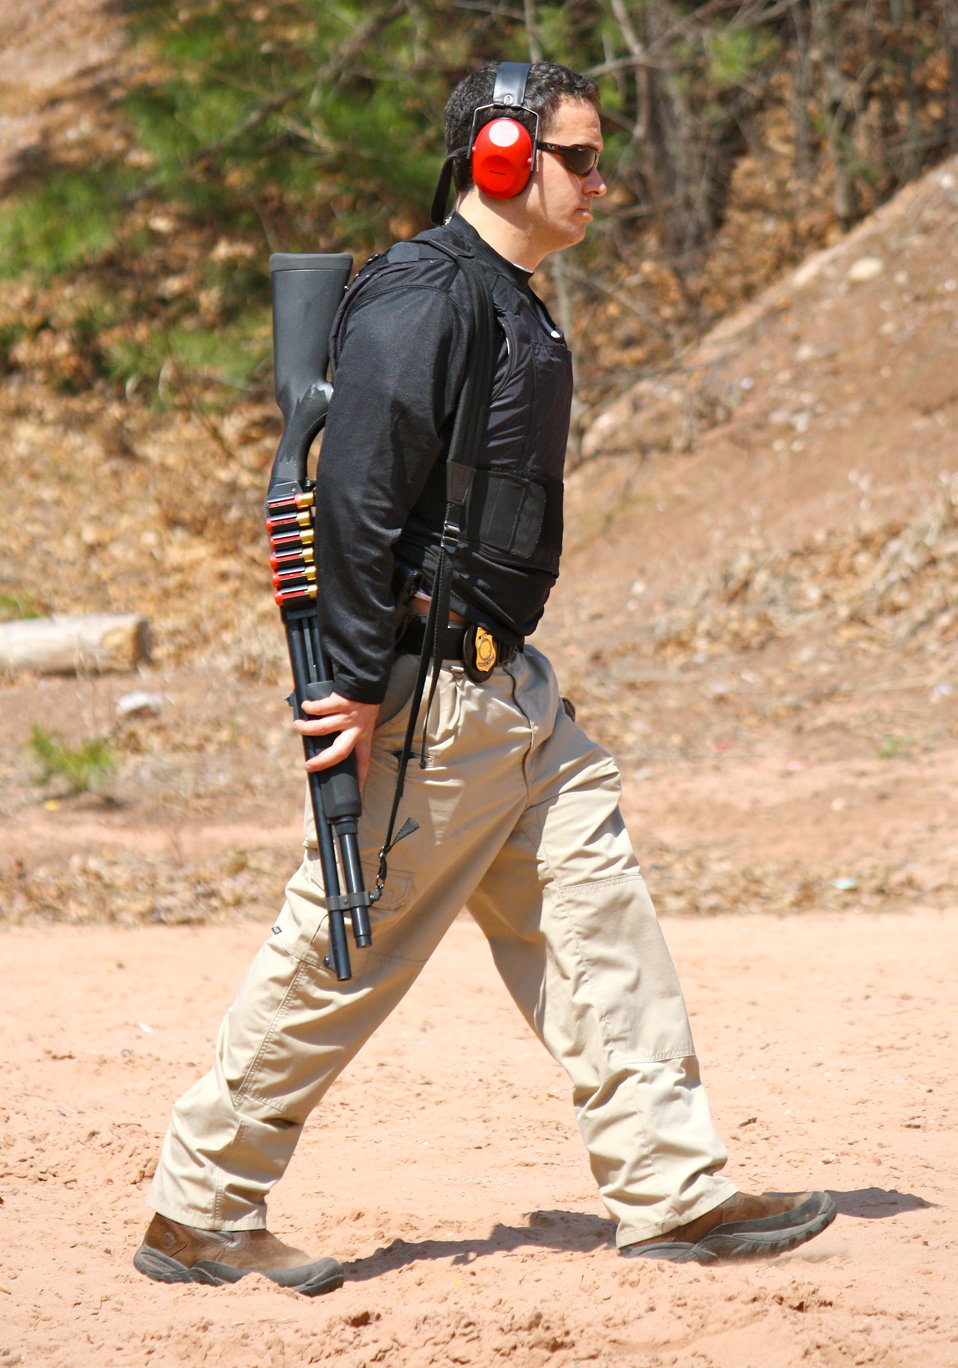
Agent Carrying Shotgun

Law Enforcement target practice at outdoor shooting range in Glastonbury, CT.